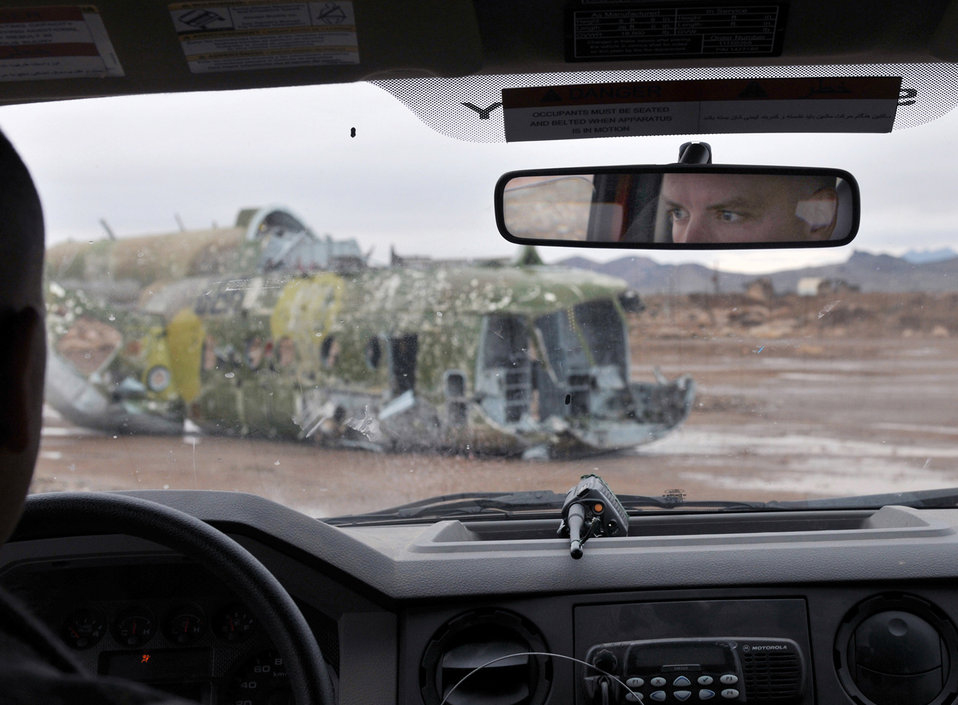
Advisory fire fighters key to AAF future

Master Sgt. Matthew Hansen drives a fire truck toward a simulated helicopter crash March 6, 2011, at Shindand Air Base, Afghanistan. Upon arrival, two Afghan airmen whom Sergeant Hansen advises extinguished the fire and simulated taking other emergency actions to the helicopter and pilot. Sergeant Hansen is an 838th Air Expeditionary Advisory Group adviser.